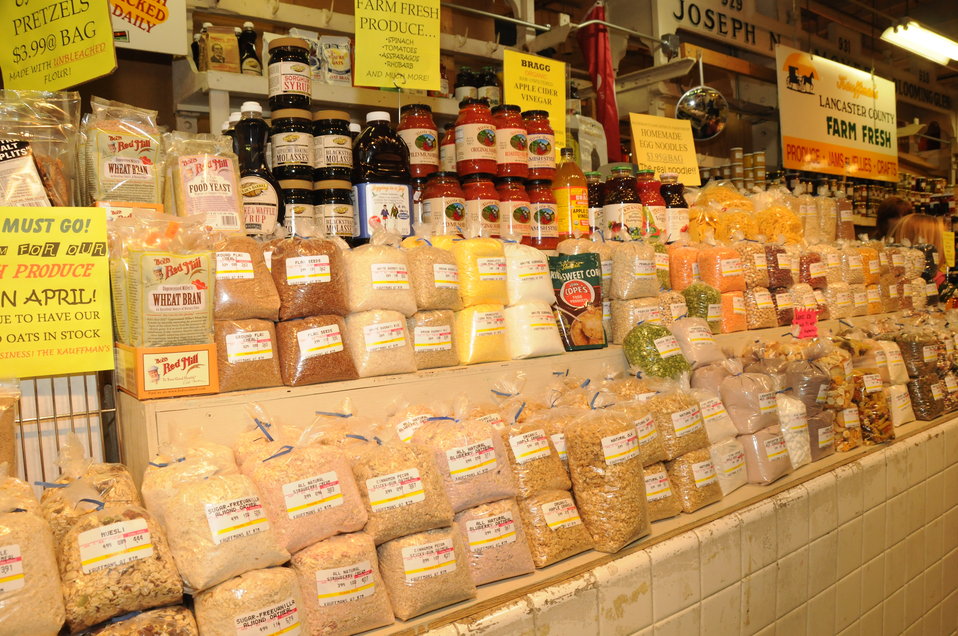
The Reading Terminal Market offers produce fresh from the field to the people of Philadelphia, PA on April 3, 2009. There are Amish specialties, fruits, vegetables, meats, seafood, and poultry. Reading Terminal Market opened for business in 1892 with approximately 78,000 square feet and almost 800 spaces for vendors. The Market was revitalized in the 1990’s and today is still the gastronomic bazaar that its original planners had envisioned. Many of the historic Market stands survived the reconstruction and are once again filled with local produce, fresh eggs, milk, meats, poultry, seafood, handmade crafts, jewelry, and clothing. The Market is home to more than 80 merchants, two of whom are descendants of the original stand holders from a century before.